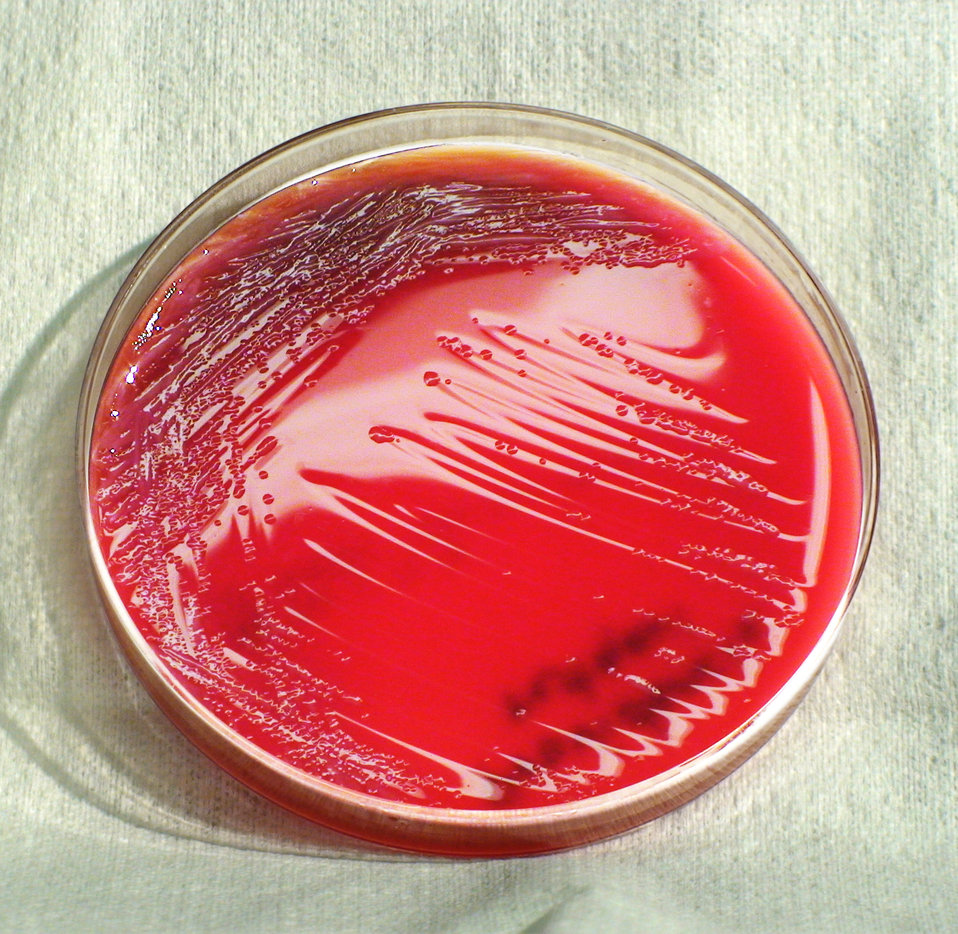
This photograph depicts the colonial morphology displayed by Gram-negative Providencia rettgeri bacteria, which was grown on a medium of sheep's blood agar (SBA), for a 24 hour time period, at a temperature of 37�C. See PHIL 12456, for a closer view of these bacterial colonies.